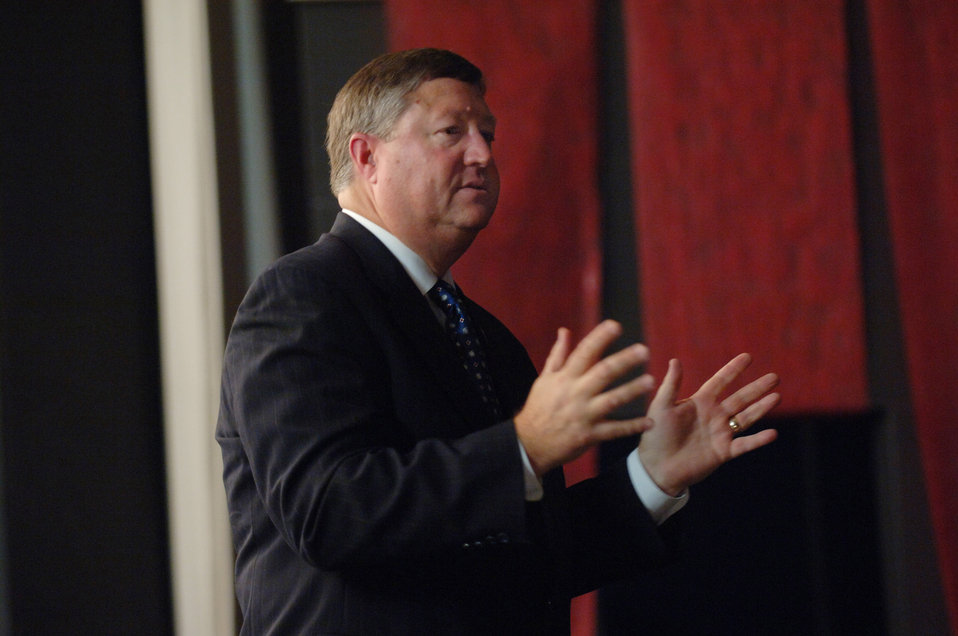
SECAF townhall meeting

Secretary of the Air Force Michael B. Donley speaks to a crowd of more than 300 Airman Sept. 10 about the service's latest initiatives and priorities during a townhall meeting at Ramstein Air Base, Germany.